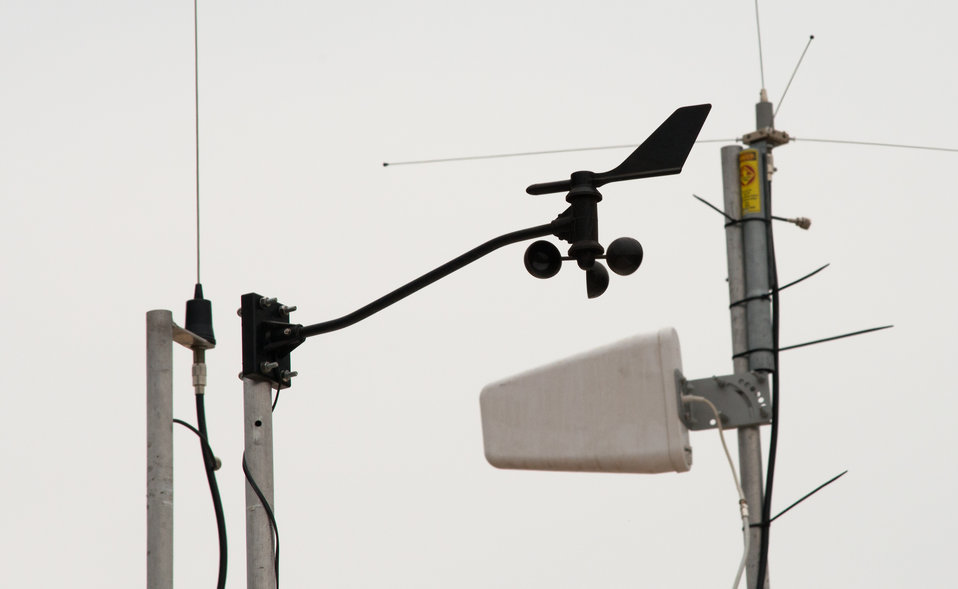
Weather and communications equipment from the National Interagency Fire Center's National Interagency Incident Communications Division, in Boise, ID, in use at the Big Windy Complex Wildlands Fire, Incident Command Post (ICP) in Merlin, OR on Friday, Aug 9, 2013. The fire center is approximately 15 miles west of Interstate-5 and East Northeast of Galice, Oregon.